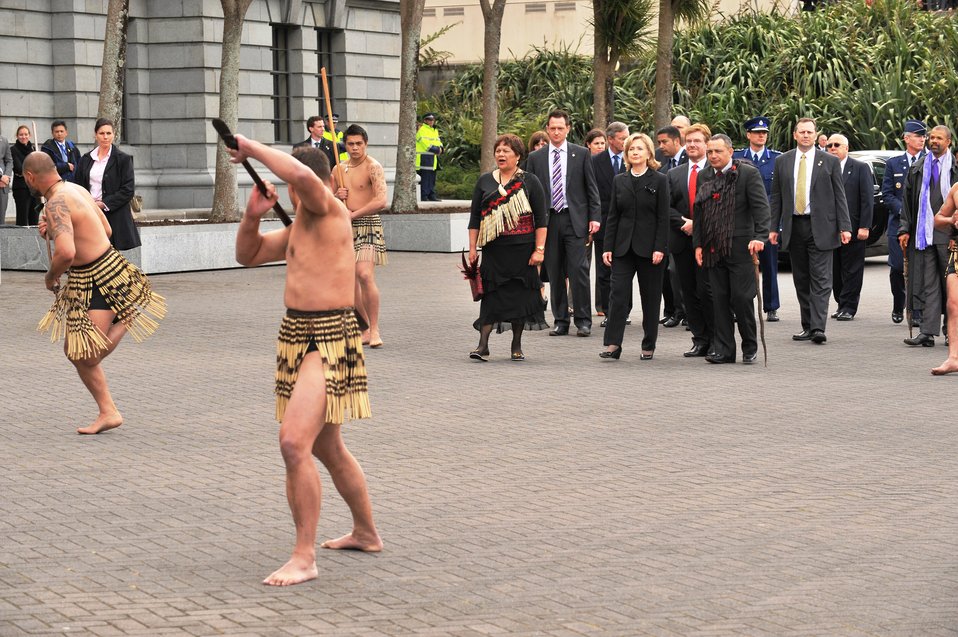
Secretary Clinton Watches a Powhiri With White-Tahuparae, Ambassador Huebner, and Albert

U.S. Secretary of State Hillary Rodham Clinton observes a Powhiri, a Maori welcoming ceremony, with Rose White-Tahuparae (left of the Secretary), U.S. Ambassador to New Zealand David Huebner (immediate right of the Secretary with the red tie), and Gerrard Albert (right of the Secretary) on the Parliament forecourt in Wellington, New Zealand, on November 4, 2010.